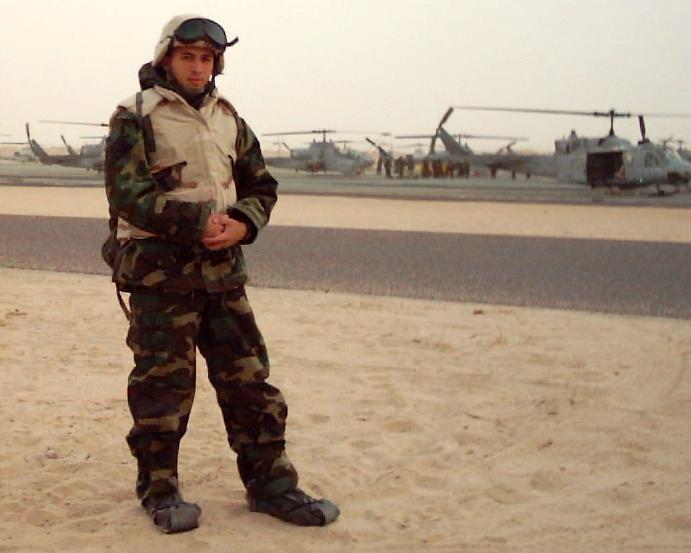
James Graves - Operation Iraqi Freedom 2003

James Graves in Region 6 served in Operation Iraqi Freedom in 2003.